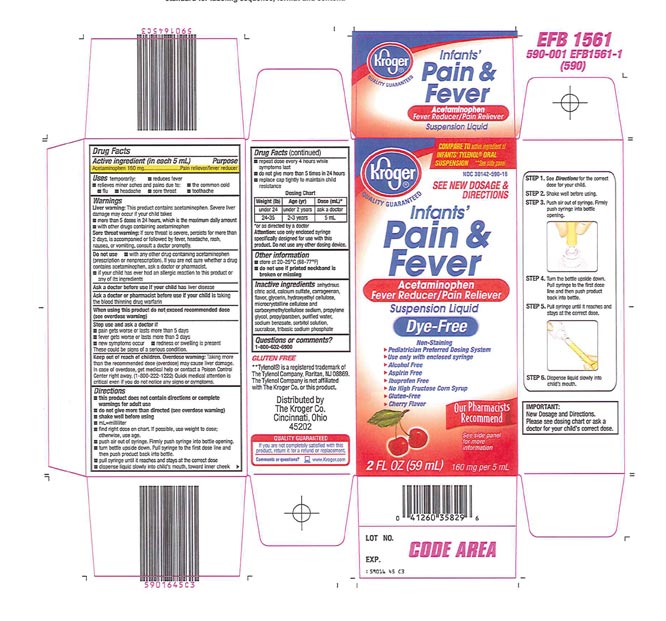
Recalled - Acetaminophen infant suspension liquid

November 1, 2013 – Product Recall – Perrigo Initiates Nationwide Voluntary Product Recall of Acetaminophen Infant Suspension Liquid, 160 Mg/5 Ml, Due to a Potential Defect with the Co-packaged Oral Syringe.